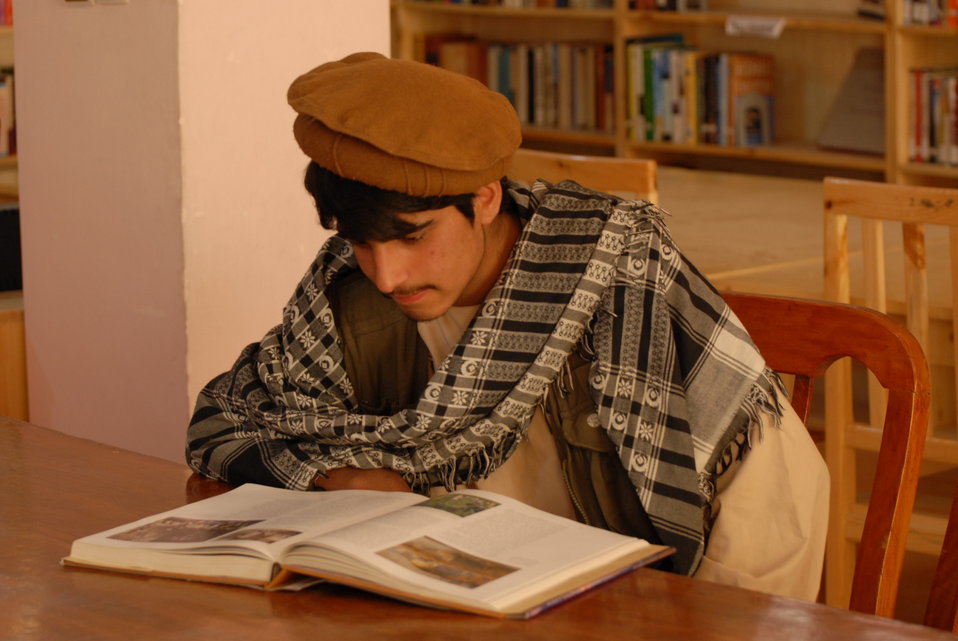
'On the Road' in Balkh Province